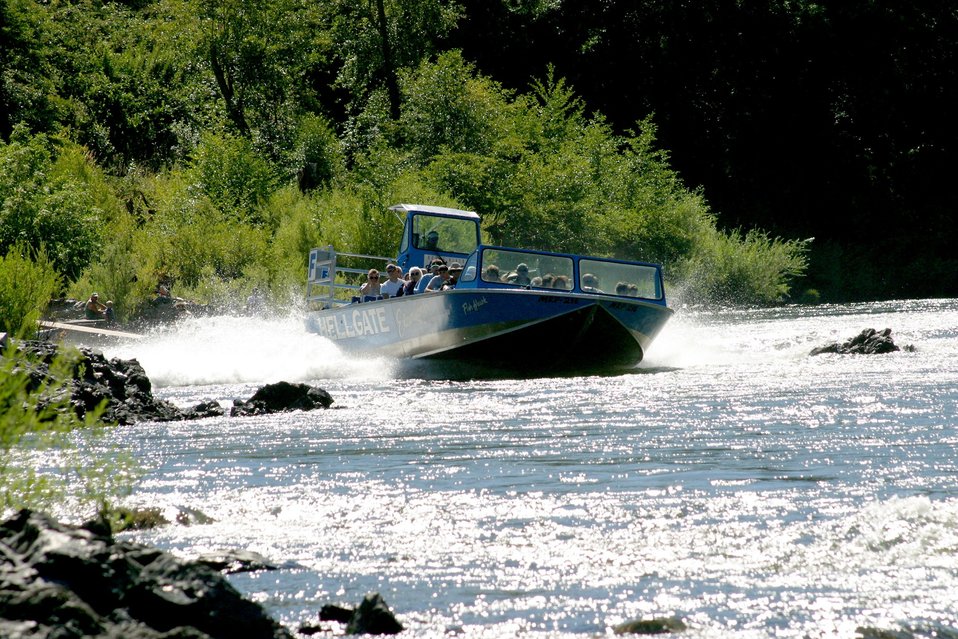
Jet boat pass Hog Creek.